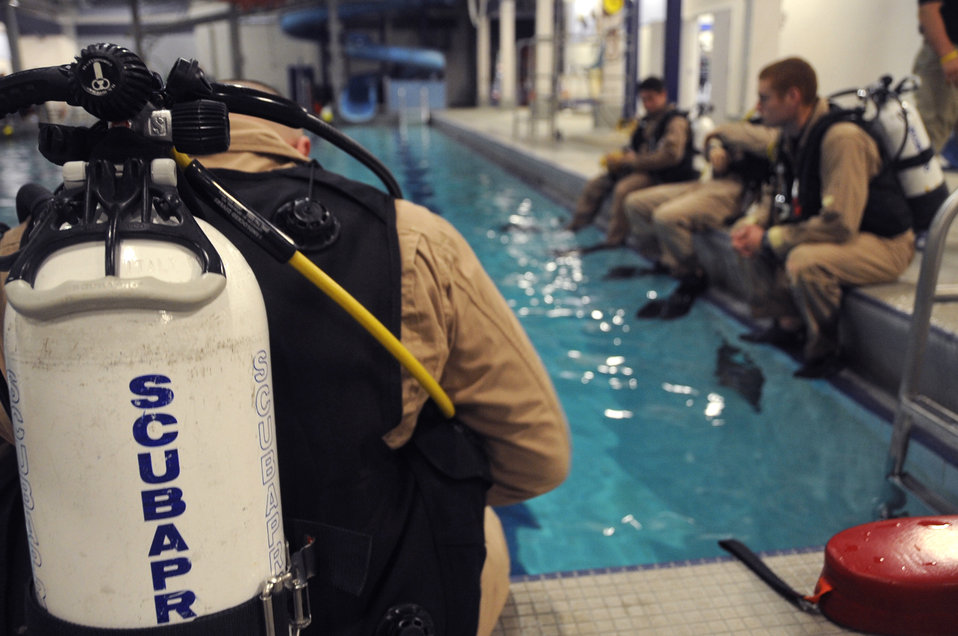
Water survival course moves from Florida to Fairchild

Instructors wait at the edge of the pool for an underwater survival training simulation to begin. The 10 instructors of the 22nd Training Squadron are also qualified on diving equipment.